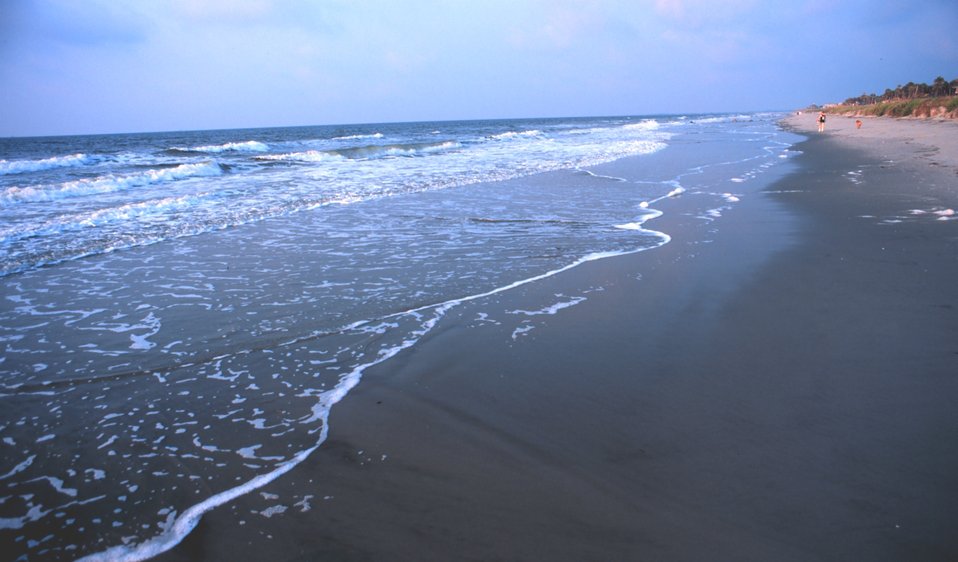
Gentle surf on the Folly Island Beach